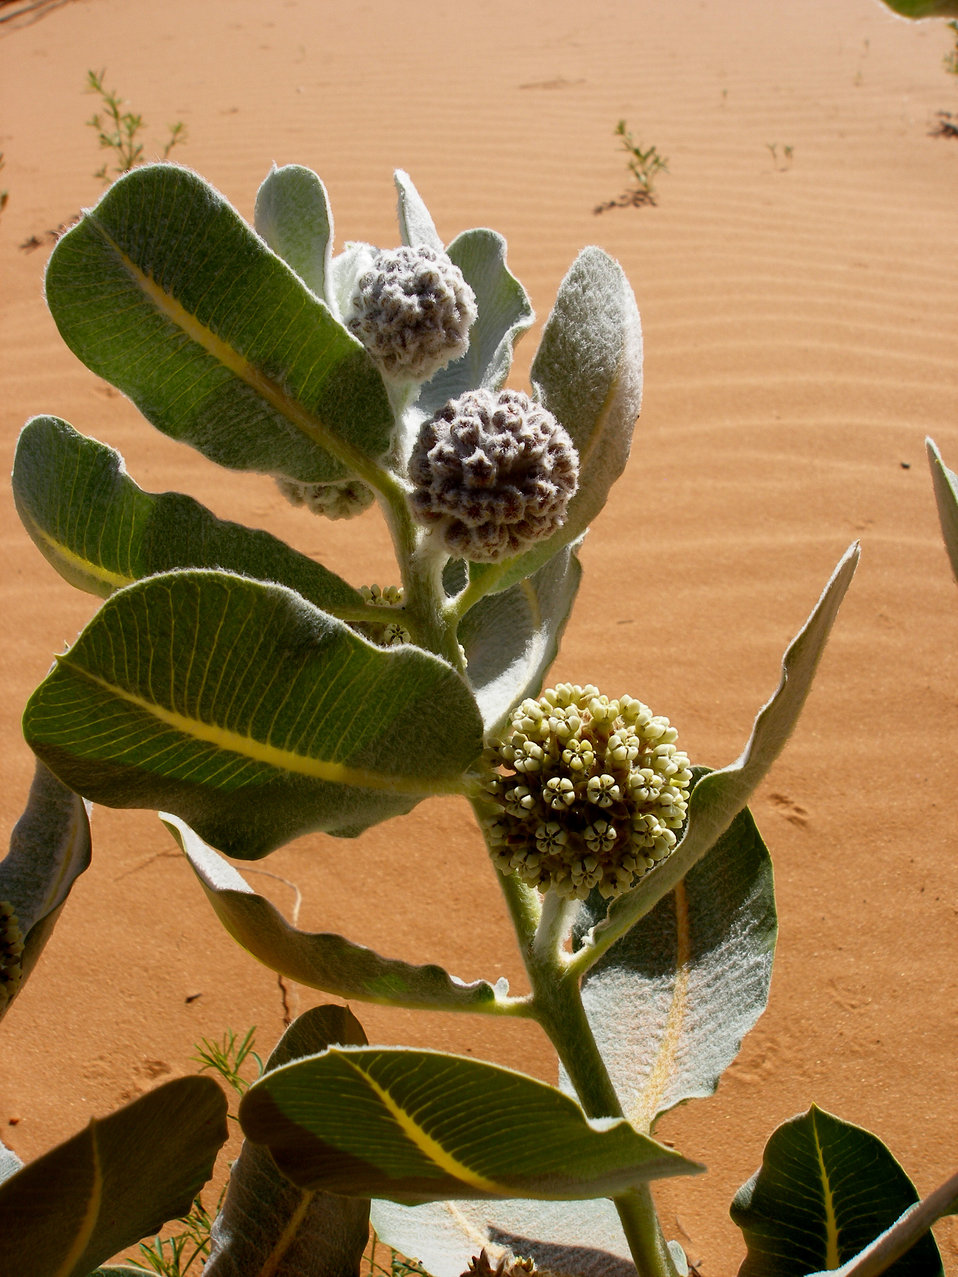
Welsh milkweed (Asclepias welshii)

This species is restricted to active sand dunes derived from Navajo Sandstone in sagebrush, juniper and Ponderosa pine communities between 5,000 and 6,230 ft. in elevation. It is endemic to Kane County, UT, and Coconino, Navajo & Apache counties, AZ. The Welsh milkweed is listed threatened.